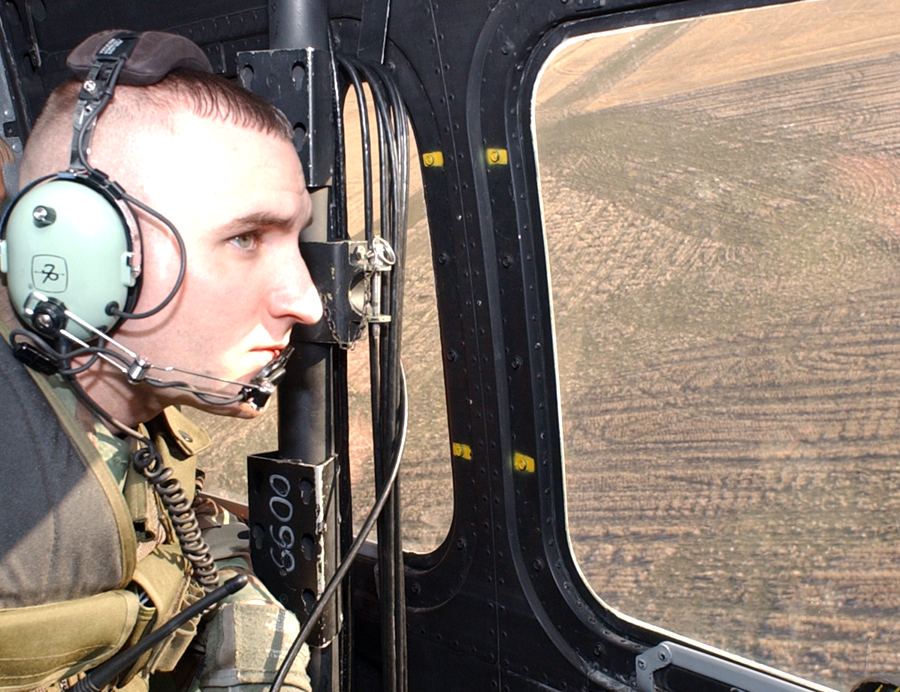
Airborne security flight reaches across 'high frontier'

OVER MONTANA -- Senior Airman Michael Watts conducts an aerial sweep of a missile launch facility in Malmstrom Air Force Base's missile complex before maintenance begins. He is assigned to the 741st Missile Security Forces Squadron.